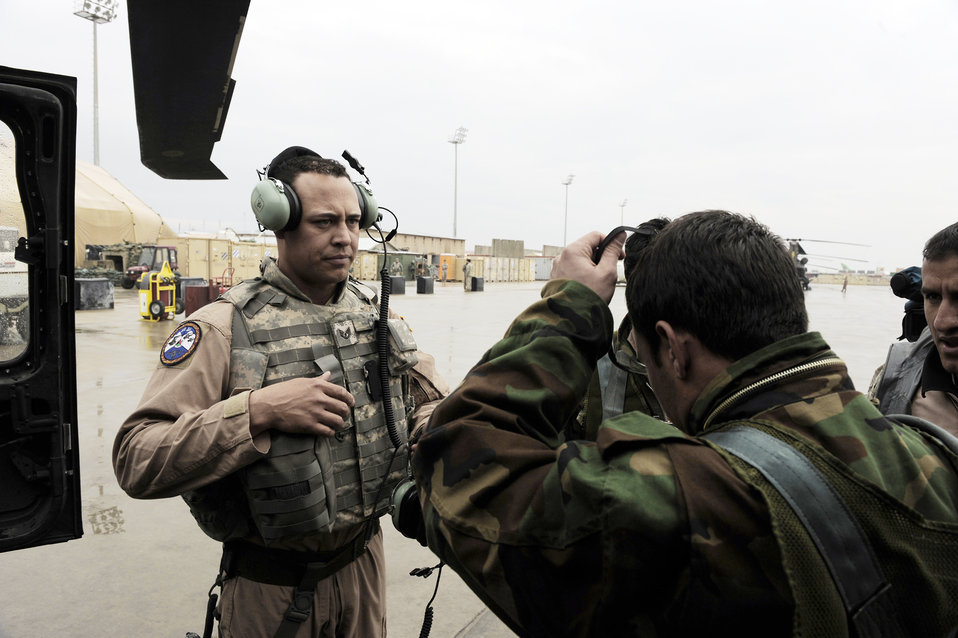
Joint team leads Afghan crew chief academy

Tech. Sgt. Garrett Cain helps gear-up one of his Afghan National Army Air Corps crew chief students before boarding a UH-60 Blackhawk helicopter, Feb. 28, 2010, at Bagram Airfield, Afghanistan. Sergeant Cain is a rotary-wing crew chief mentor assigned to 440th Air Expeditionary Advisor Squadron.